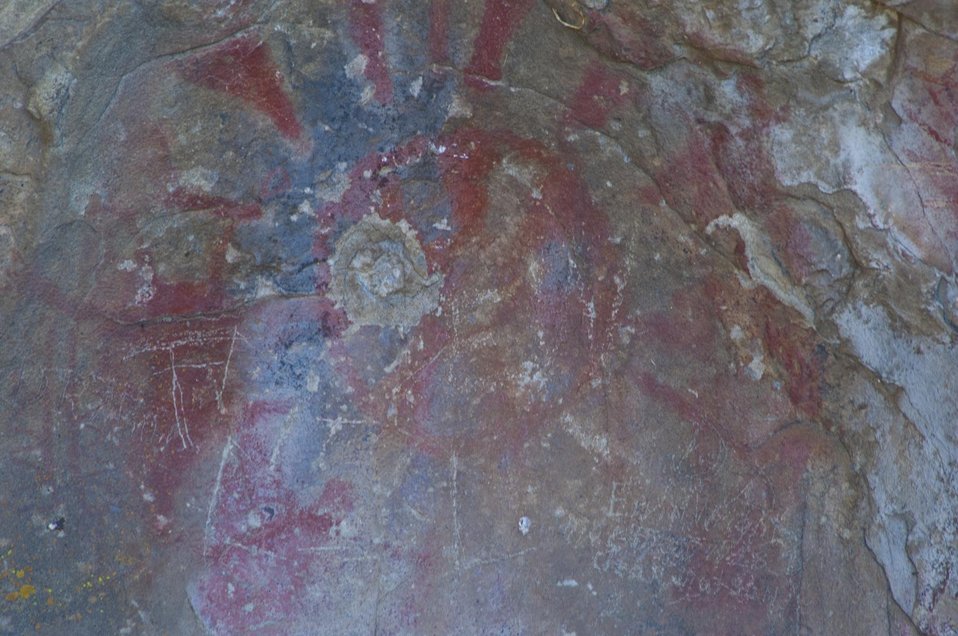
Pictograph at Painted Rock, Carrizo Plain 5